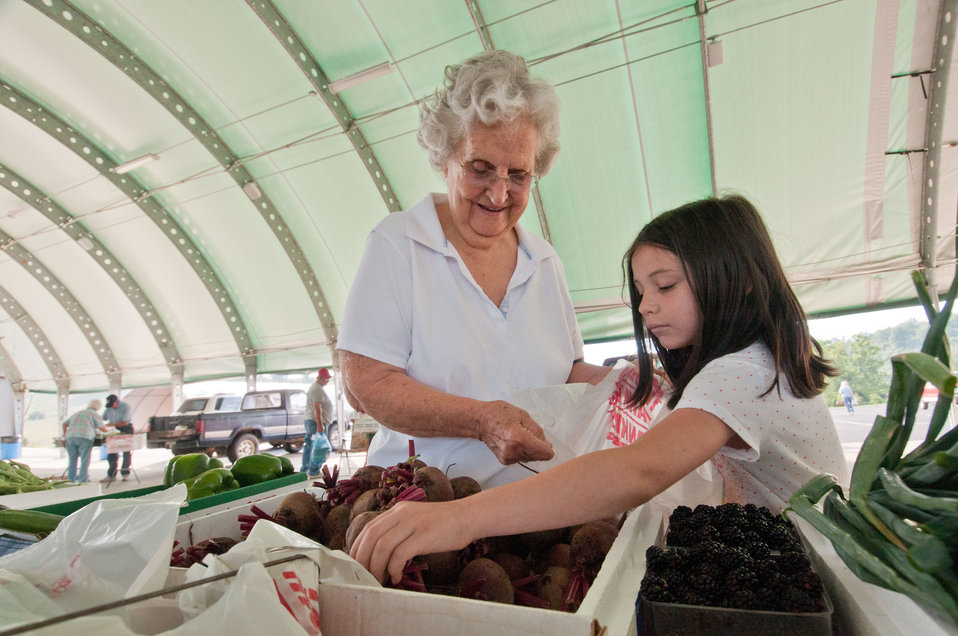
Kaylee Black (7, right) helps Bath County resident Virginia Lollis bag her beets at the Bath County Agricultural Education and Marketing Center, Owingsville, KY, on Friday, July 15, 2011. The Center was the recipient of a $400,000 Rural Business Enterprise Grant. It has given farmers and producers from Bath and surrounding counties the opportunity to manufacture and market their locally grown and locally produced value-added and “Kentucky Proud” branded products, including but not limited to, fresh produce, artisan crafts and specialty food products. The Center is open year-round and allow residents to sell products in four different retail categories, including Kentucky products, regional crafts, “green” groceries and bakery/deli. Several producers expressed their gratitude for Rural Development’s assistance in making the center a reality. The project was made possible through funding the American Recovery and Reinvestment Act of 2009 enacted by the 111th United States Congress in February 2009 and signed into law on February 17, 2009, by President Barack Obama.